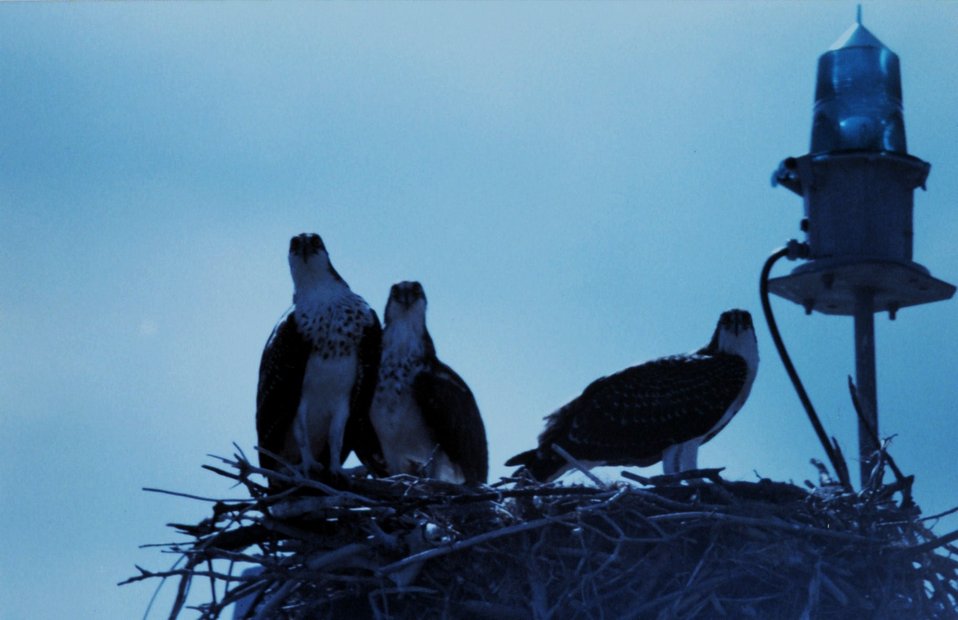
Osprey - Panion haliaetus